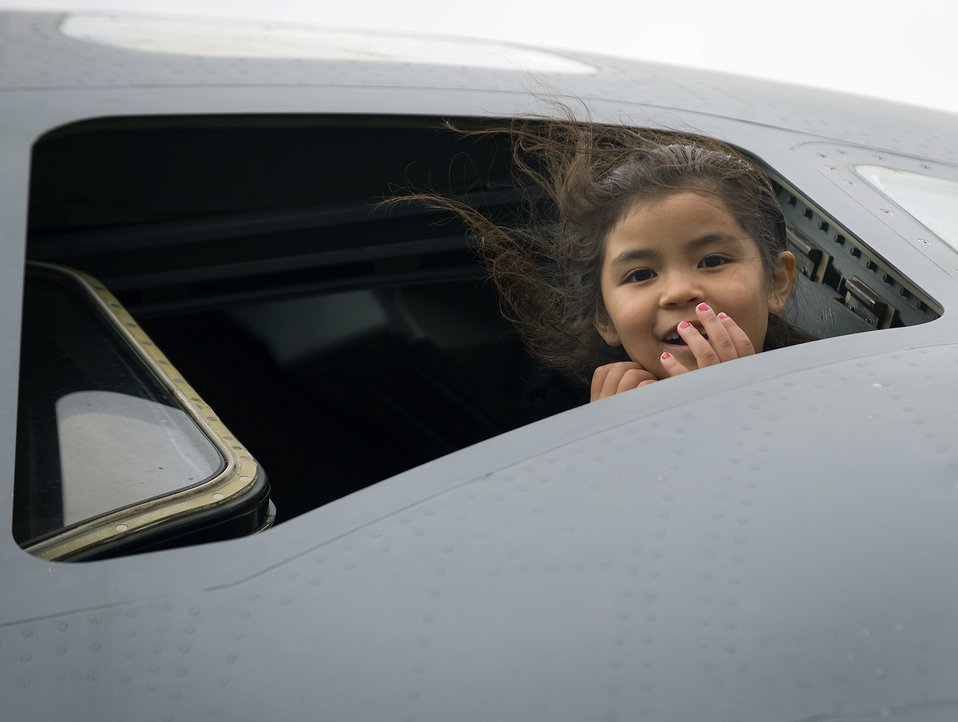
Air Force Week Sacramento

Itzel Rodriguez, 6 years old, peers out from the cockpit window of a C-17 Globemaster III Sept. 12, 2009, during the California Capital Air Show, the culminating event of Air Force Week Sacramento. Air Force Week-Sacramento is an event featuring various activities and exhibitions to educate the community about the Air Force's capabilities and missions.